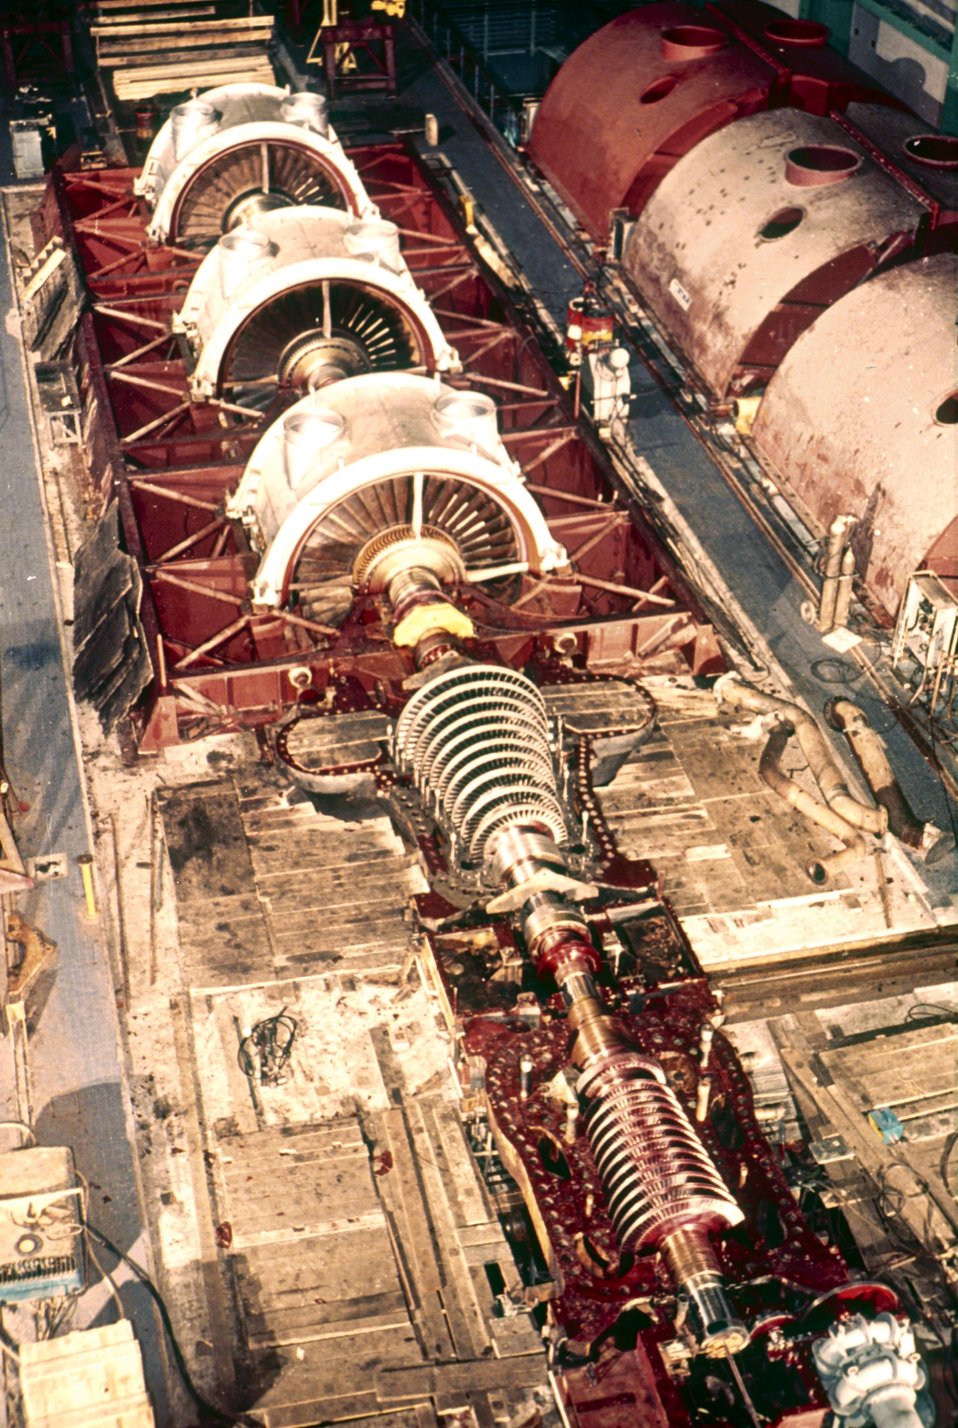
Une turbine µ vapeur.